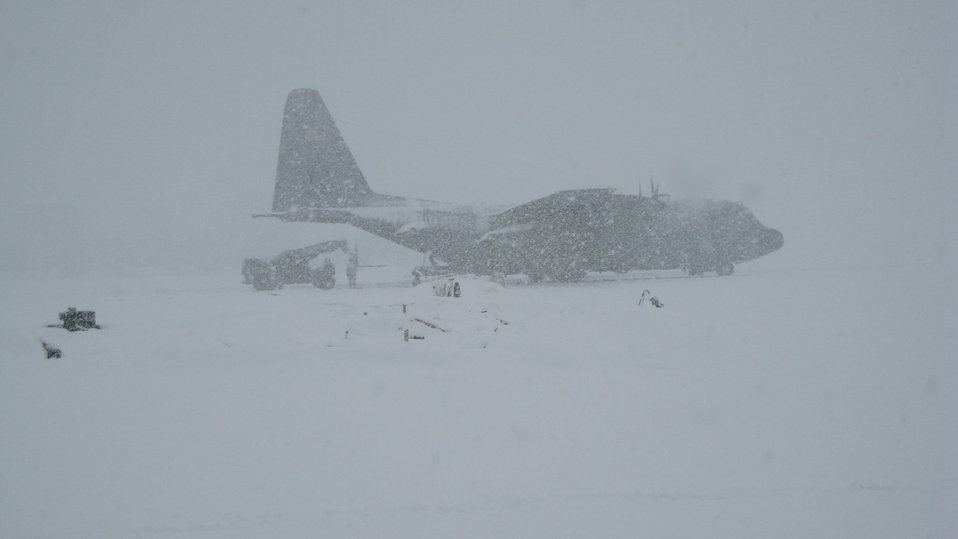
Forward area refueling point

Airmen assigned to the 374th Logistics Readiness Squadron Fuels Management Flight work with Marines at a forward area refueling point in support of humanitarian assistance and disaster relief efforts March 18, 2011, at Yamagata Airport, Japan.